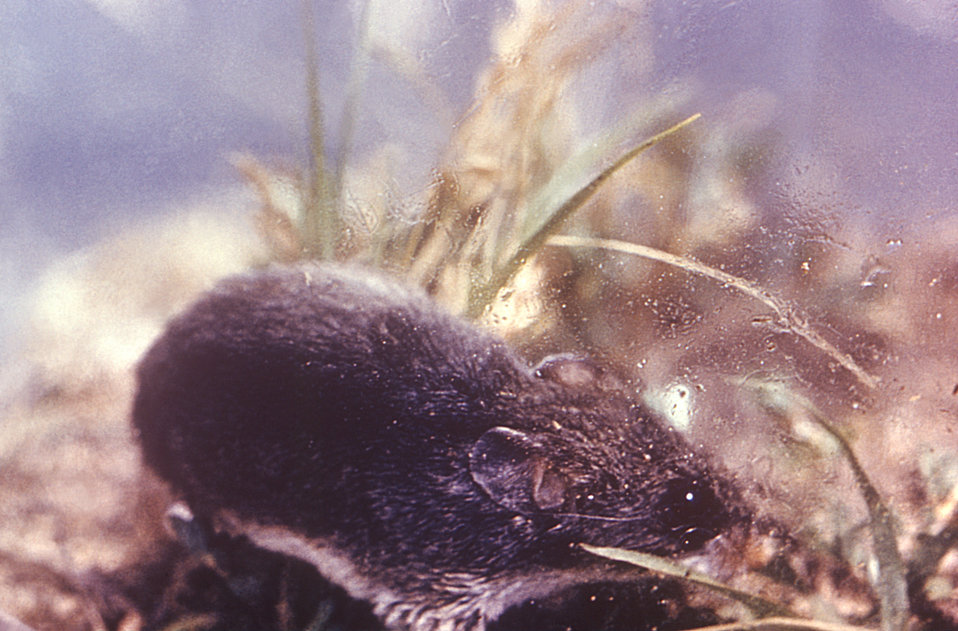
Held within a glass enclosure, this image depicts a cotton rat, Sigmondon hispidus, which is a host to the dermatophytic fungus, Trichophyton mentagrophytes, which can infect both mammals, as well as humans.